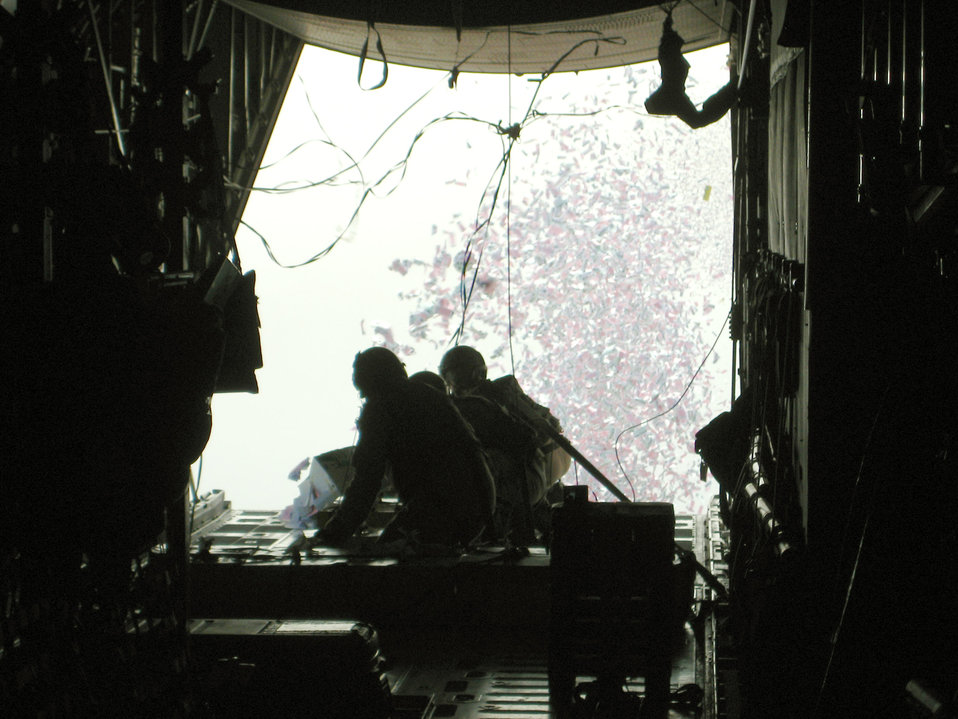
Airmen aid coalition ground forces one leaflet at a time

1st Lt. Brock Burkhardt, Staff Sgt. John Columbia and Senior Airman Fred Koch pull cords attached to the static line of a C-130 Hercules following the airdrop of 300,000 leaflets March 2 over an Iraqi province. The mission is part of leaflet airdrop mission supporting the Australians from Overwatch Battle Group (West)-4 in southern Iraq. All three Airmen are assigned to the 737th Expeditionary Airlift Squadron deployed from Ramstein Air Base, Germany, for operations Enduring Freedom and Iraqi Freedom.